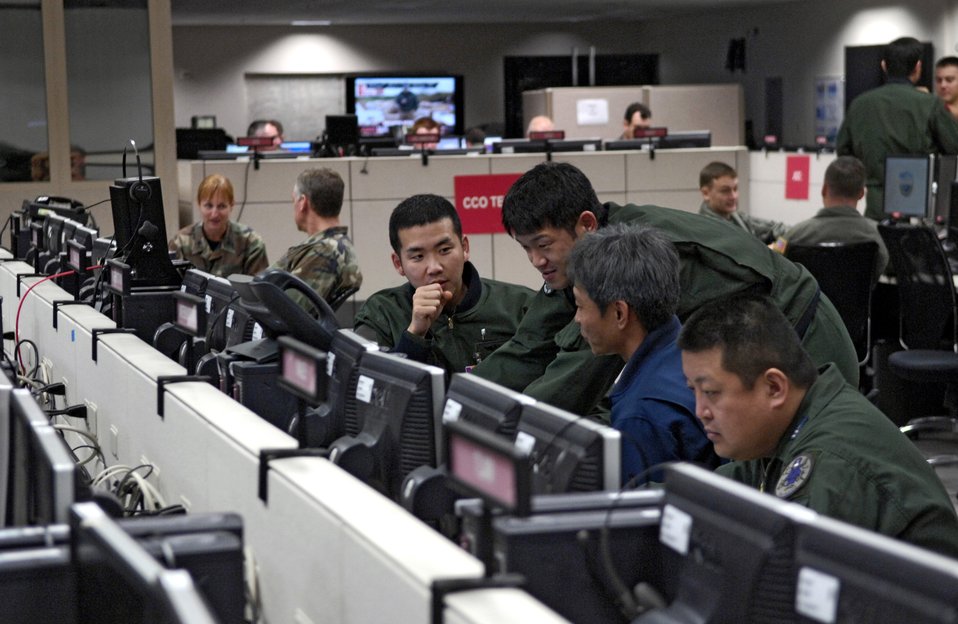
American, Japanese airmen join forces in Keen Edge '07

Japan Air Self Defense Force liaison officers work inside the Air Operations Center during Exercise Keen Edge '07 Feb. 2 at Hickam Air Force, Base, Hawaii. Keen Edge is joint bilateral exercise to increase combat readiness and interoperability with the Japan Air Self Defense Force.